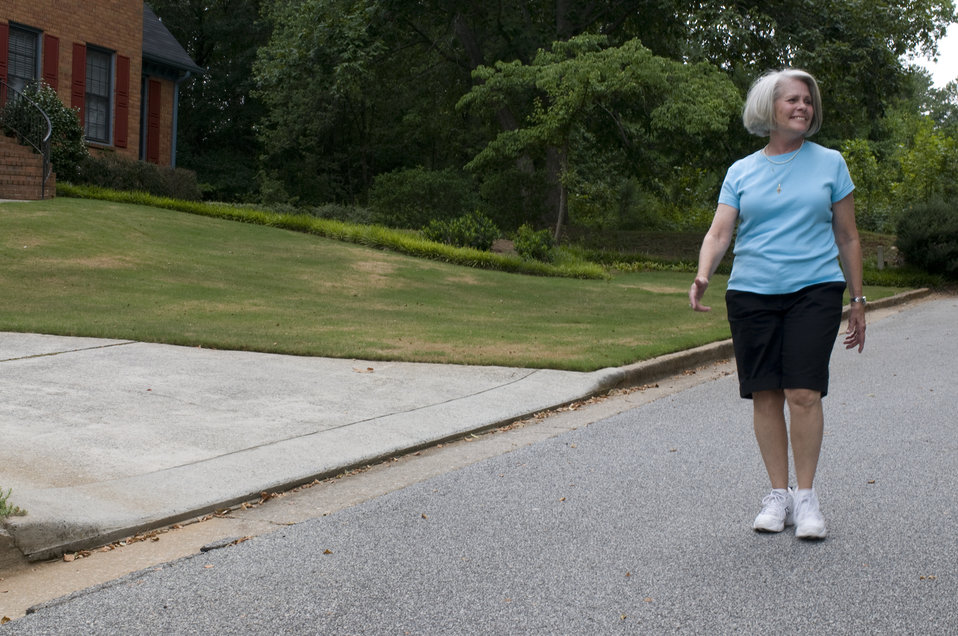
After having secured her footwear, and applied sunscreen to her sun-exposed skin, this woman was finally able to set out on her daily walk on this sunny Georgia day. Her walk would not be a long one, for it appears that she'd brought no water bottle with her in order to avoid the effects of possible dehydration.